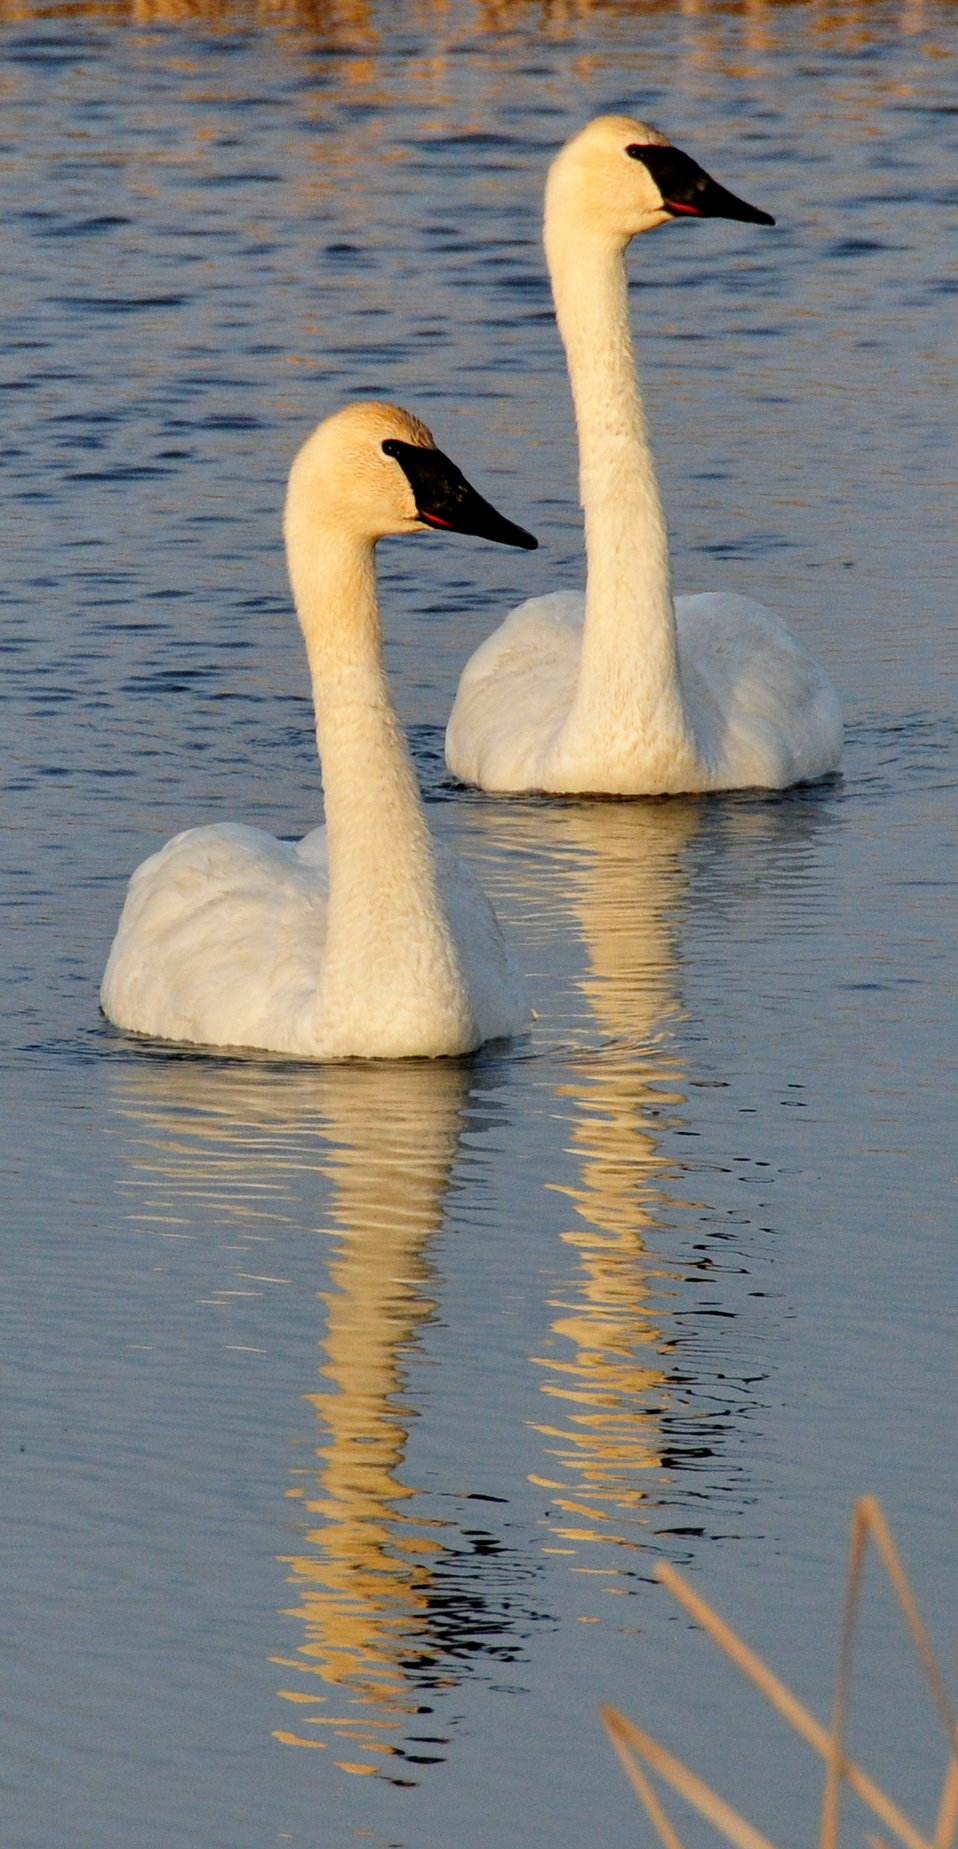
Trumpeter swan pair on Seedskadee NWR 02

A pair of trumpeter swans on Seedskadee NWR. Trumpeter swans have established a breeding population on and near Seedskadee NWR and this area now fledges nearly half of the cygnets in Wyoming.